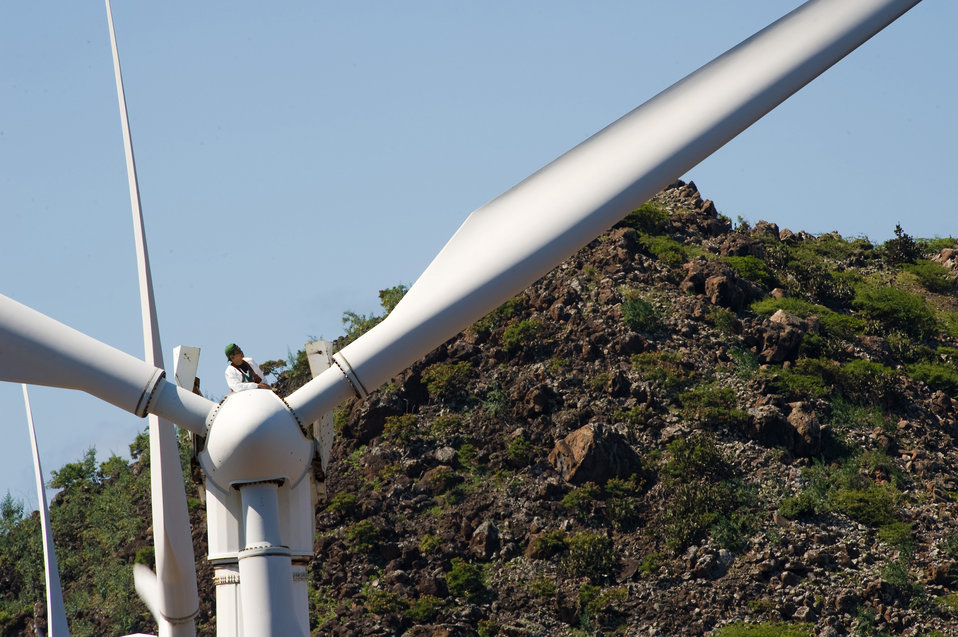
Ascension Island Green Way

Mr. Damien Cuello is more than 100-feet high as he inspects Wind Turbine#1 at 45th Operations Group Detachment 2, Ascension Auxiliary Airfield (AAF), South Atlantic Ocean. The power house operator/ mechanical associate is tethered and stands on the drive-line to also get parallel views of the other wind turbines. The rotor disk of three blades is more than 25 meters in diameter. Mr. Cuello is a Computer Sciences Raytheon contract associate in charge of maintenance for the 6-wind turbine facility. The wind turbines work in parallel with low-load diesel generators powering the airfield, Space Command sites and facilities, and a royal air force airfield facility on the island. Ascension AAF's award winning economical self-sufficiency solutions also includes drinking water production and waste water treatment. The mission of Det. 2 is support of eastern range space launches by collecting and disseminating radar, telemetry and tracking data. Ascension island is 35 square miles in a remote location midway between Brazil and Angola. The nearest country is Liberia - 1000 miles away.